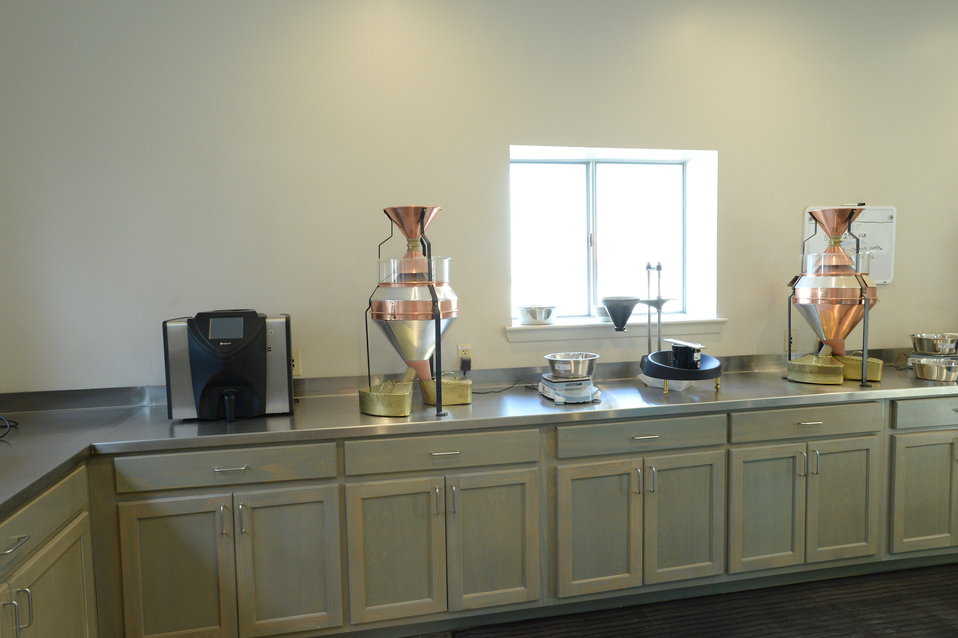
Equipment used to test grain at the U.S. Department of Agriculture (USDA) Grain Inspection, Packers and Stockyards Administration (GIPSA) Federal Grain Inspection Service (FGIS) laboratory in New Orleans, LA on Tuesday, Nov. 19, 2013.